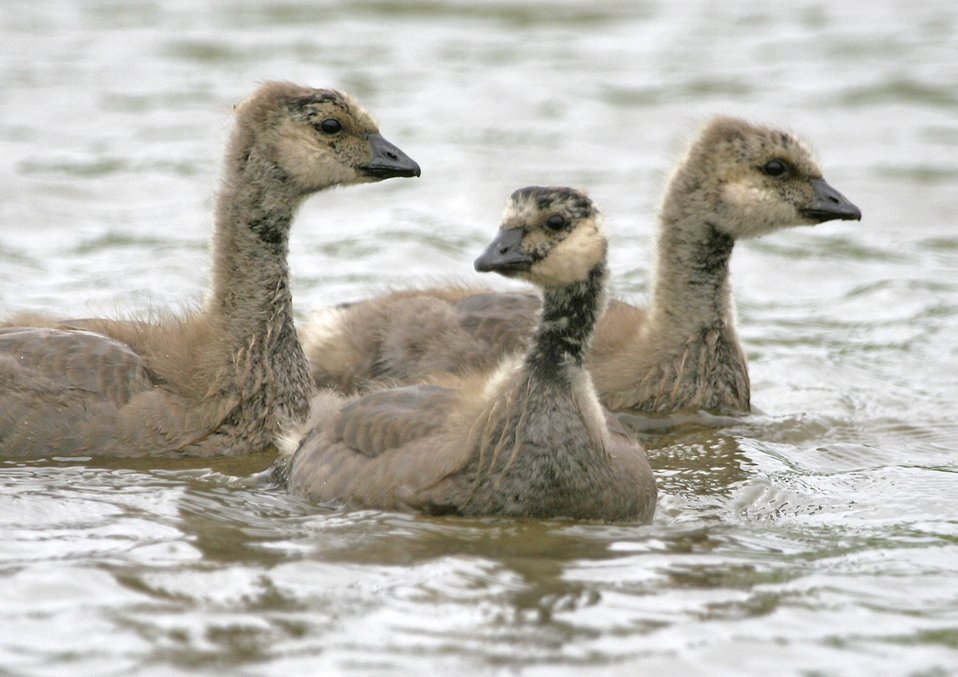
Cackling Canada goose goslings

Close view of cackling Canada goose goslings.